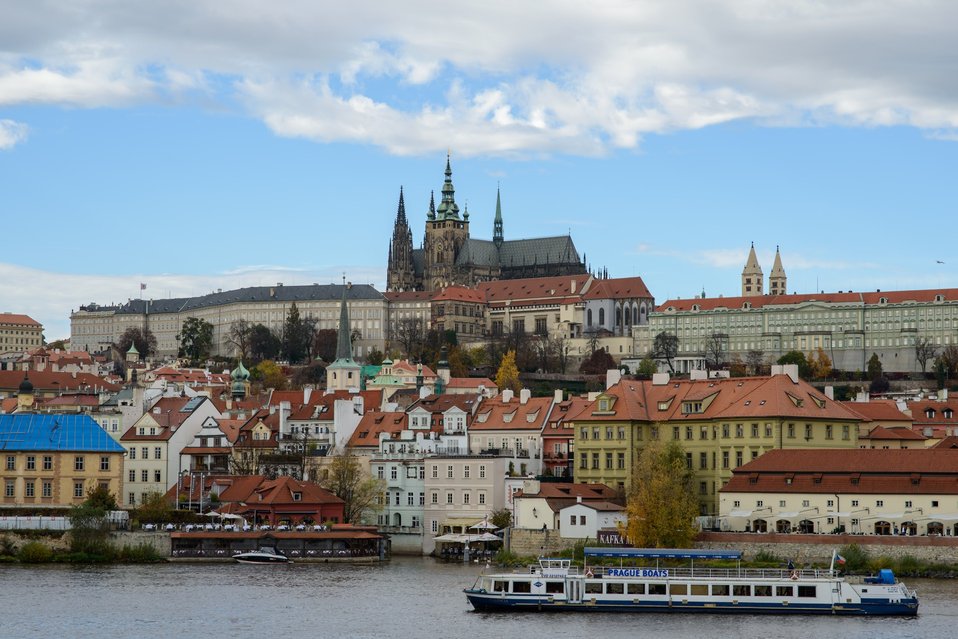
Prague castle

View of prague castle and hradcany.